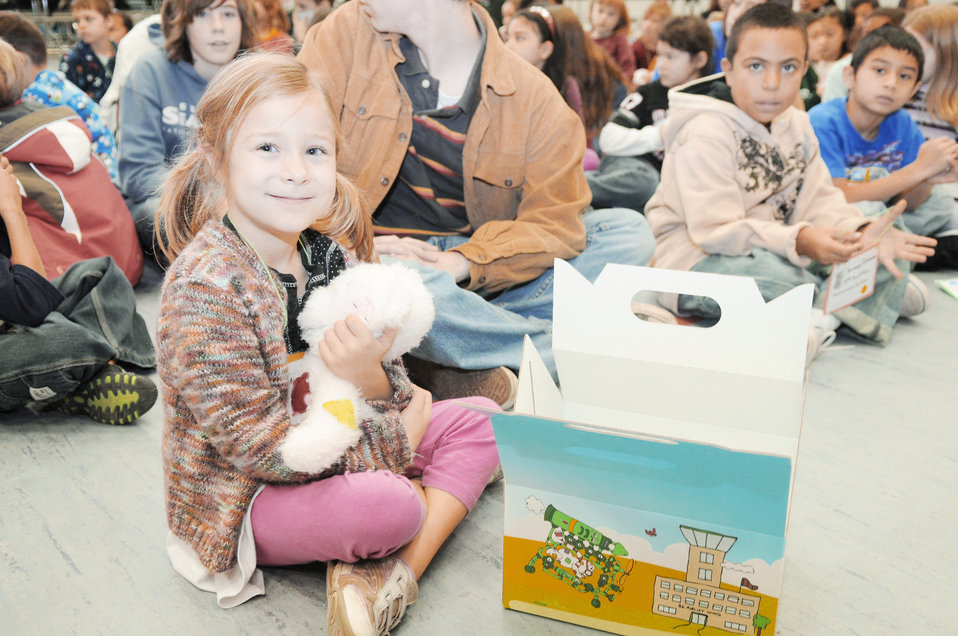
Kits help children cope with deployments

Natalie Zenk, 6, smiles after receiving one of the first Cuzzie Cares Deployment Kits Dec. 17, 2009, at Ramstein Air Base, Germany. These kits, designed to comfort school-age children during their parent's deployment, contain journals, stationary, photo albums, countdown calendars, post cards, playing cards, dog tags and a special friend, Cuzzie the Bear. Natalie is the daughter of Capt. Micheal Zenk from the 86th Aeromedical Evacuation Squadron.